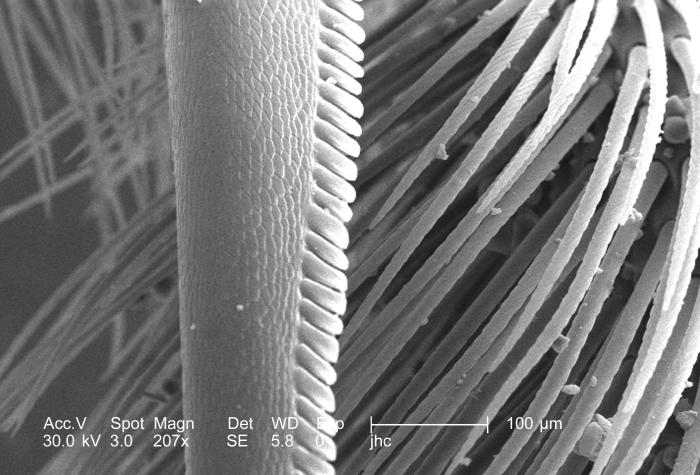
Under the moderate magnification of 207x, this scanning electron micrograph (SEM) revealed the rear leg anatomy of a carpenter bee, Xylocopa virginica, at the region of the "tibial spur". These spurs, which are exoskeletal protuberances, enable the bee to grasp various floral structures, thereby, enhancing its maneuverability inside the flower while it obtains it nectar meal, and pollinates the plant. See PHIL #8828 for a view of the same tibial spur under a lower magnification.